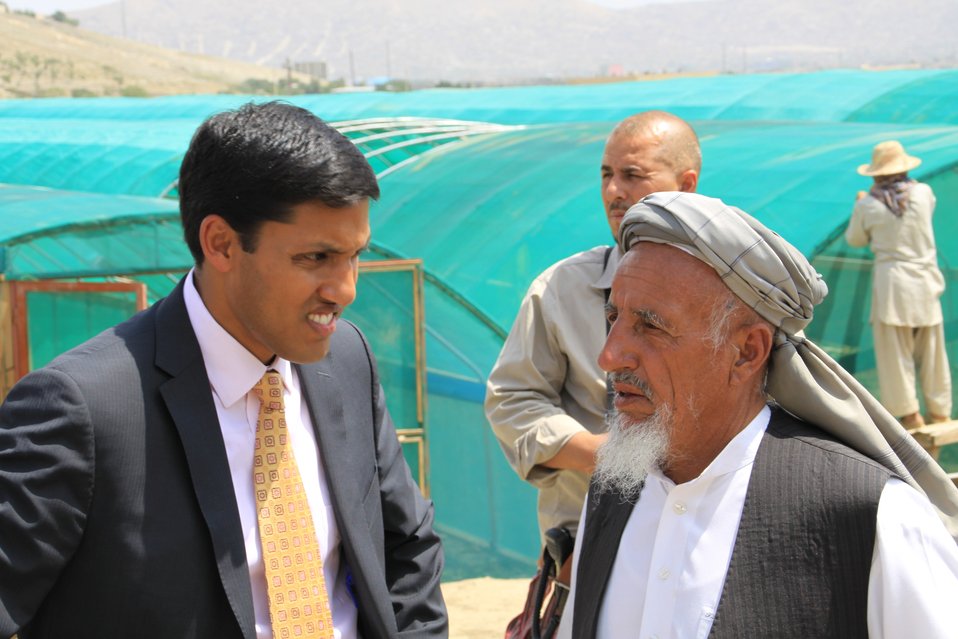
Badam Bagh Farm